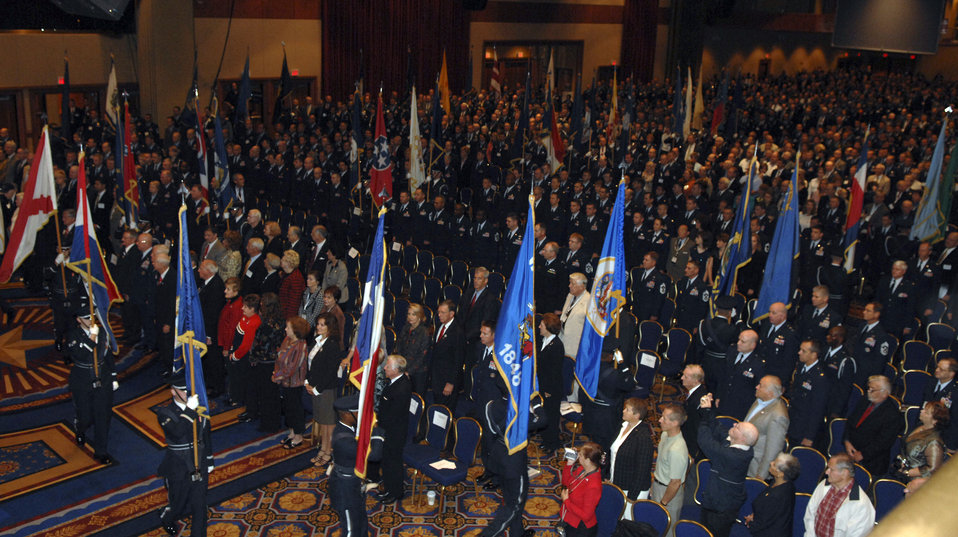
Air Force Association conference under way

Opening ceremonies began as Secretary of the Air Force Michael W. Wynne, Air Force Chief of Staff T. Michael Moseley and many other Air Force leaders gathered at the Air Force Association's Air & Space Conference and Technology Exposition on Sept 24 in Washington D.C. The conference will last for three days and will cover the newest technology and also have career enhancement seminars.